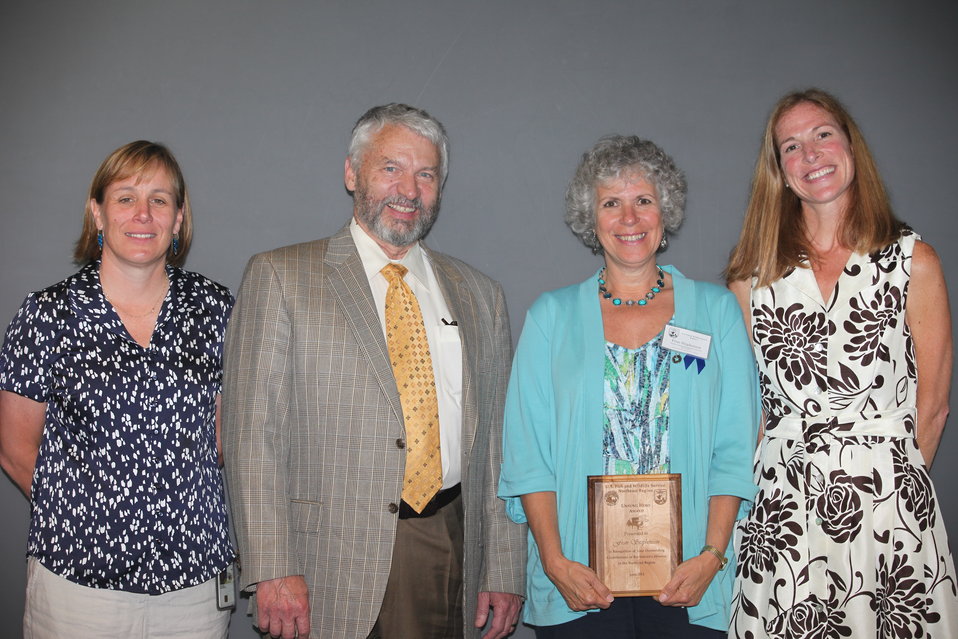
Fran Stephenson of the Wallkill River National Wildlife Refuge was awarded the Region 5 Unsung Hero Award.
From left to right: Deputy Regional Director Deb Rocque, Deputy Director Rowan Gould, Fran Stephenson and Regional Director Wendi Weber